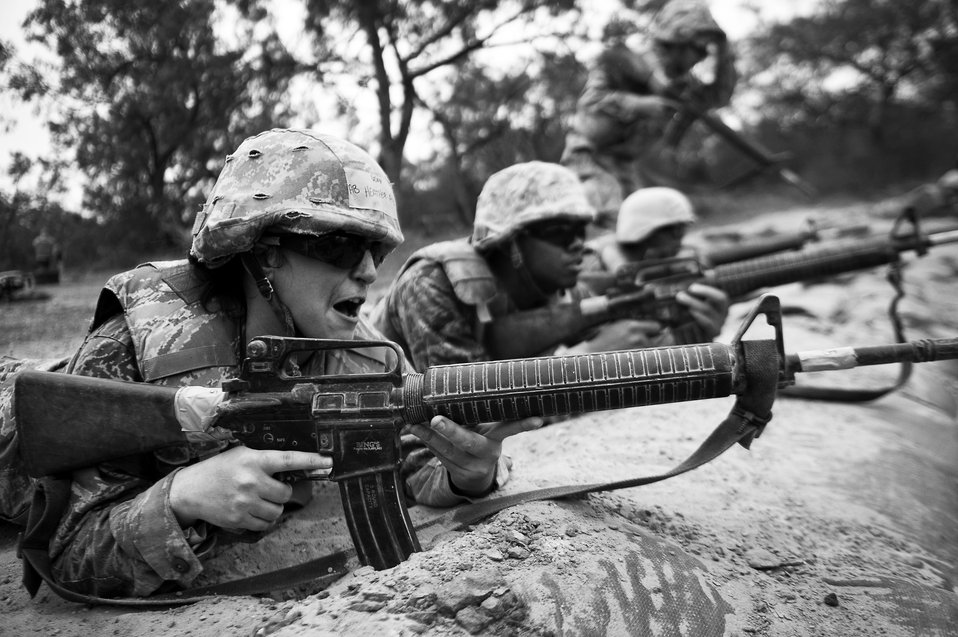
BEAST

Basic trainees go through their sixth week of Air Force basic military training at the Basic Expeditionary Airman Skills Training on May 25, 2011, at Lackland Air Force Base, Texas.